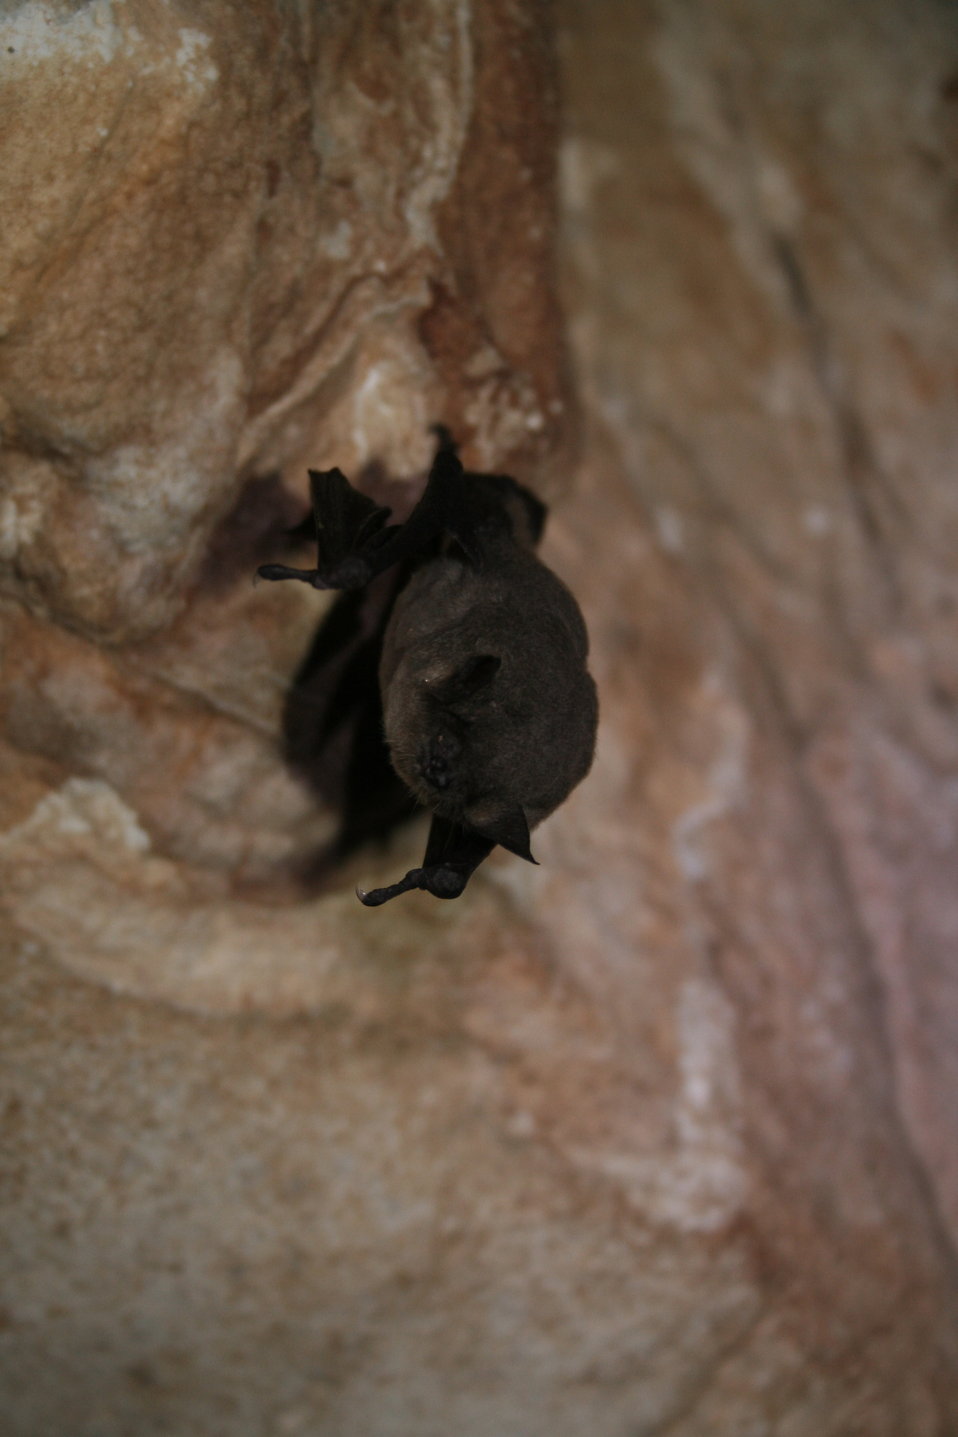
gray bat

Hibernating gray bat (Myotis grisescens)